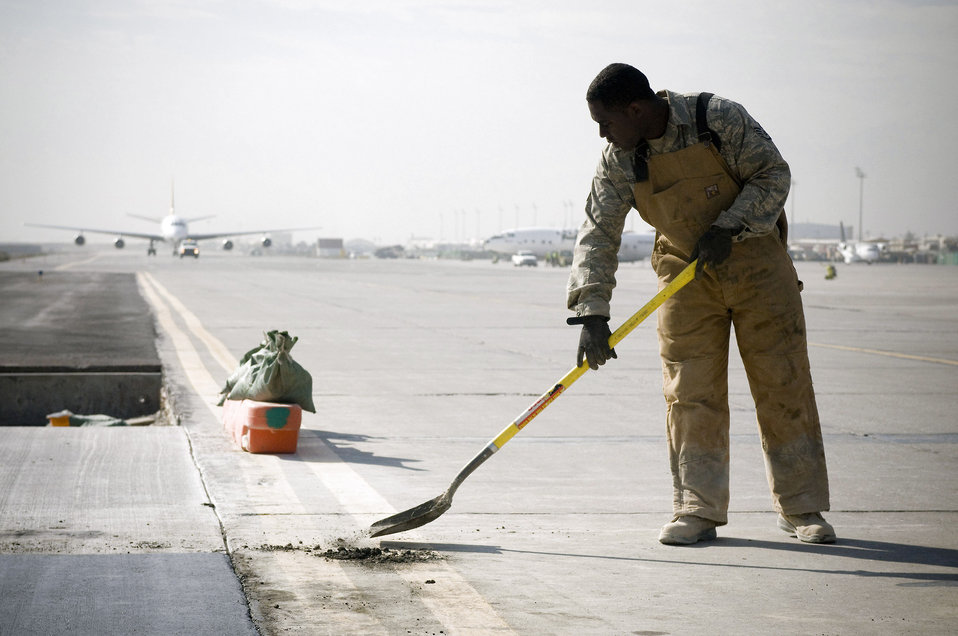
Civil engineer crews improve Bagram infrastructure

Staff Sgt. Shelton Jamison scoops away excess concrete on Thanksgiving Day at Bagram Airfield, Afghanistan. The Airmen of the 455th Expeditionary Civil Engineer Squadron must work quickly and efficiently to avoid causing traffic problems on the busy taxiway. Sergeant Jamison is assigned to the 455th ECES and deployed from Barksdale Air Force Base, La.